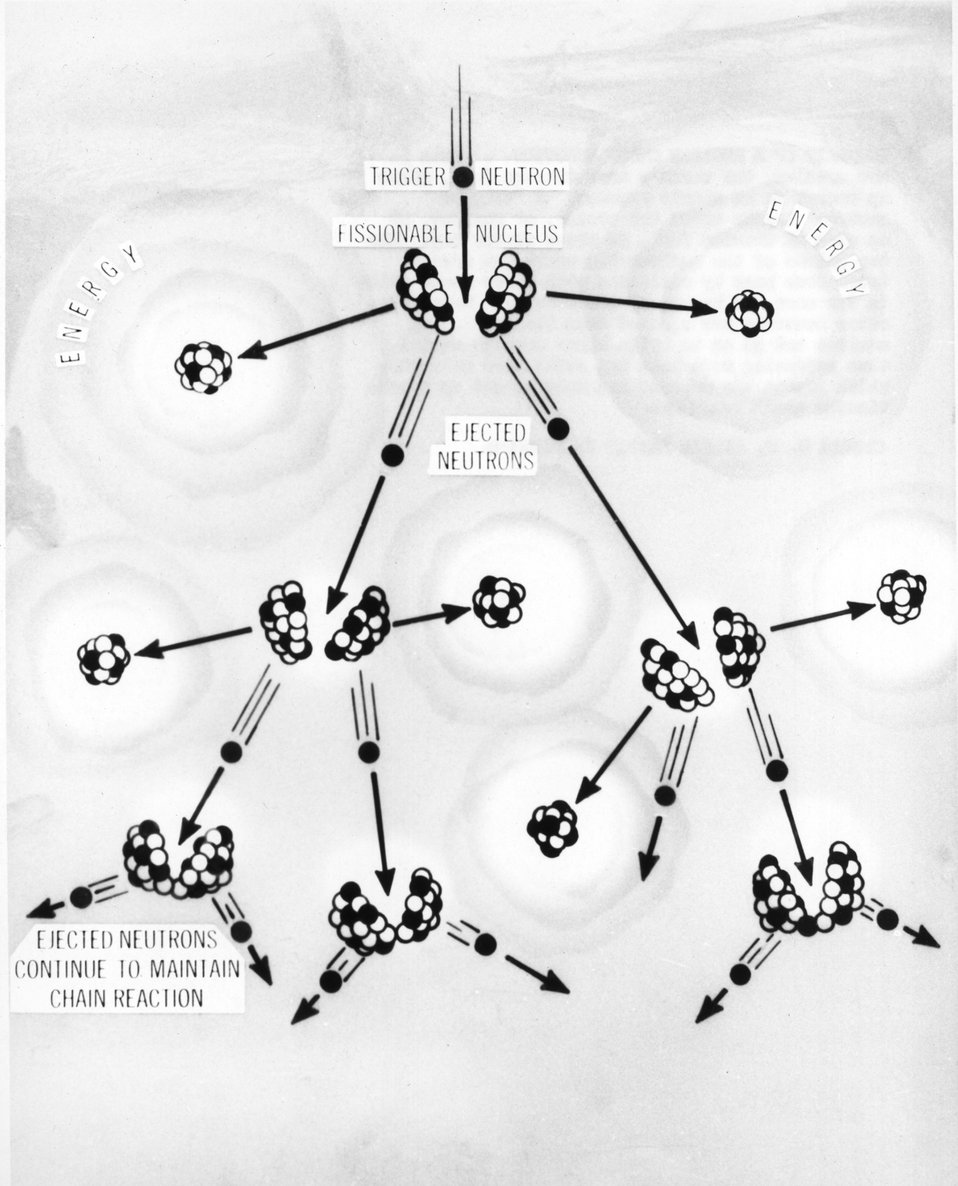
This is how uranium, the world's most amazing fuel, gives up energy in an atomic reactor. A 'trigger neutron' breaks apart the center, or nucleus, of an atom of uranium fuel, as shown at the top. c. 1964